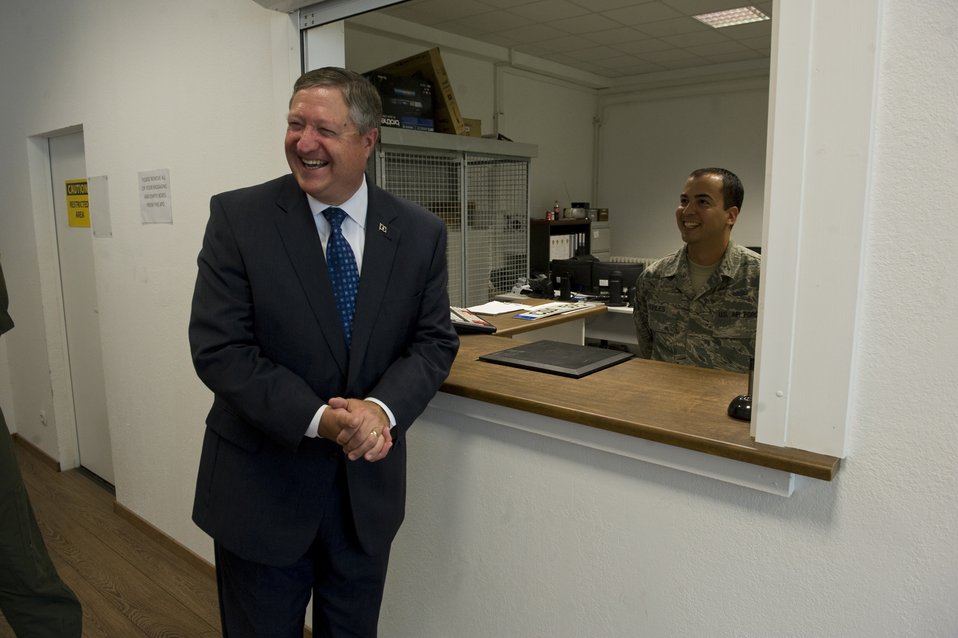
SecAF greets Airmen 4

Secretary of the Air Force Michael Donley shares a laugh with Staff Sgt. Jose Aviles, Heavy Airlift Wing postmaster, at Pápa Air Base, Hungary, July 11, 2012. The secretary visited the HAW to speak with Airmen about the direction of the Air Force, meet with them on the job and pay personal attention to the service members.